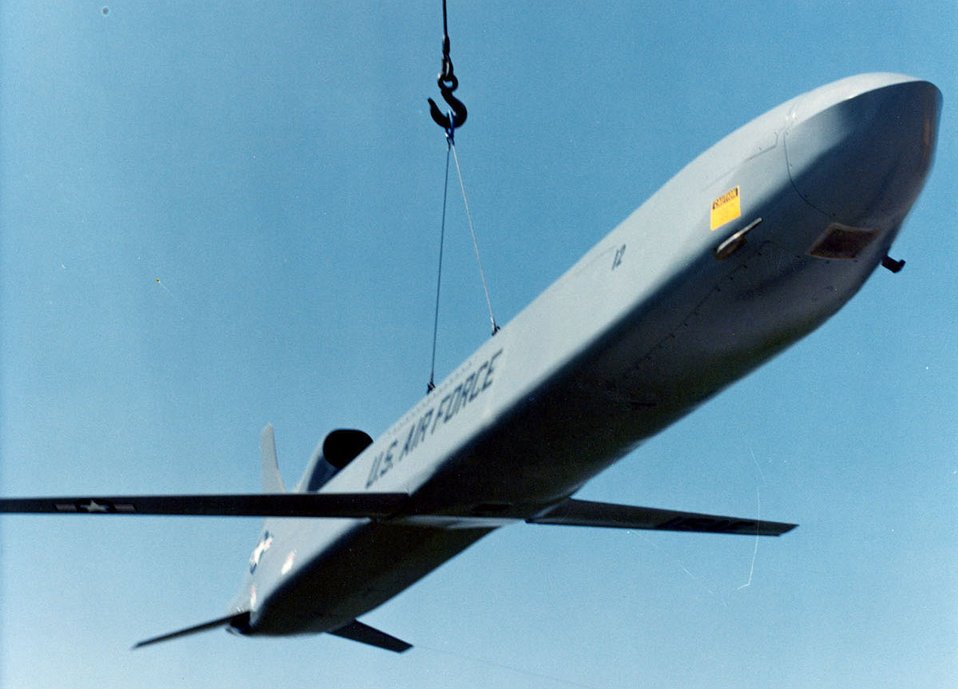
AGM-86B

DAYTON, Ohio -- Boeing AGM-86B (ALCM) at the National Museum of the United States Air Force.